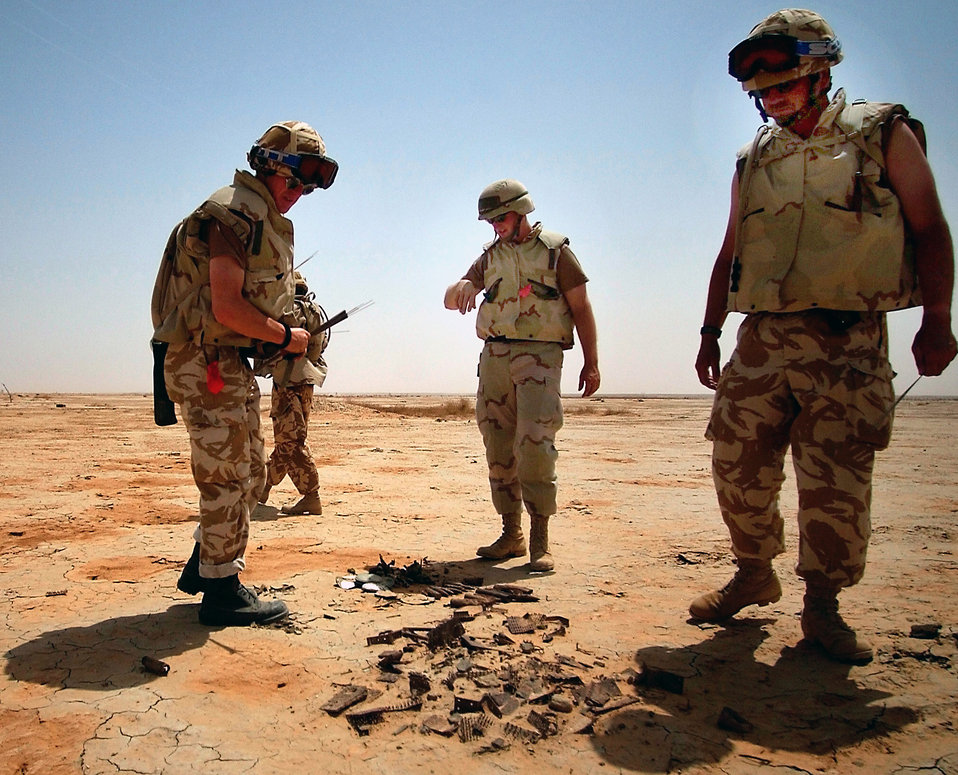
Joint EOD team

OPERATION IRAQI FREEDOM -- U.S. and Royal Air Force Explosive Ordinance Disposal personnel conduct an unexploded ordinance sweep at an undisclosed on April 6. The U.S and Royal Air Force are deployed here in support of Operation Iraqi Freedom.